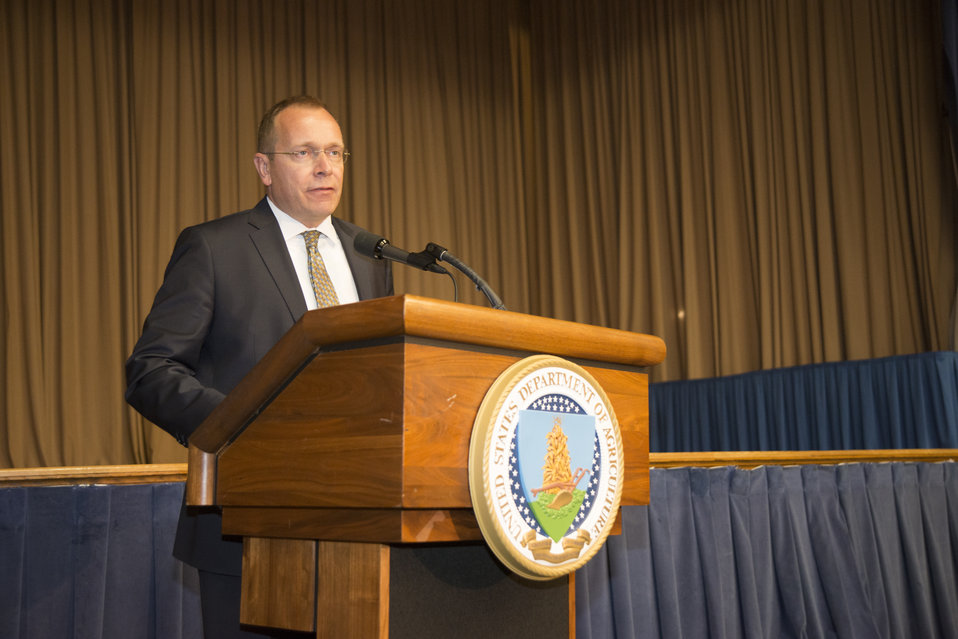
U.S. Department of Agriculture (USDA) Foreign Agricultural Service (FAS) Administrator Phil Karsting makes closing remarks at the 2014 Lesbian/Gay/Bisexual/Transgender (LGBT) Pride Observance event held in the Jefferson Auditorium at USDA in Washington, D.C. on Thursday, Jun. 5, 2014.